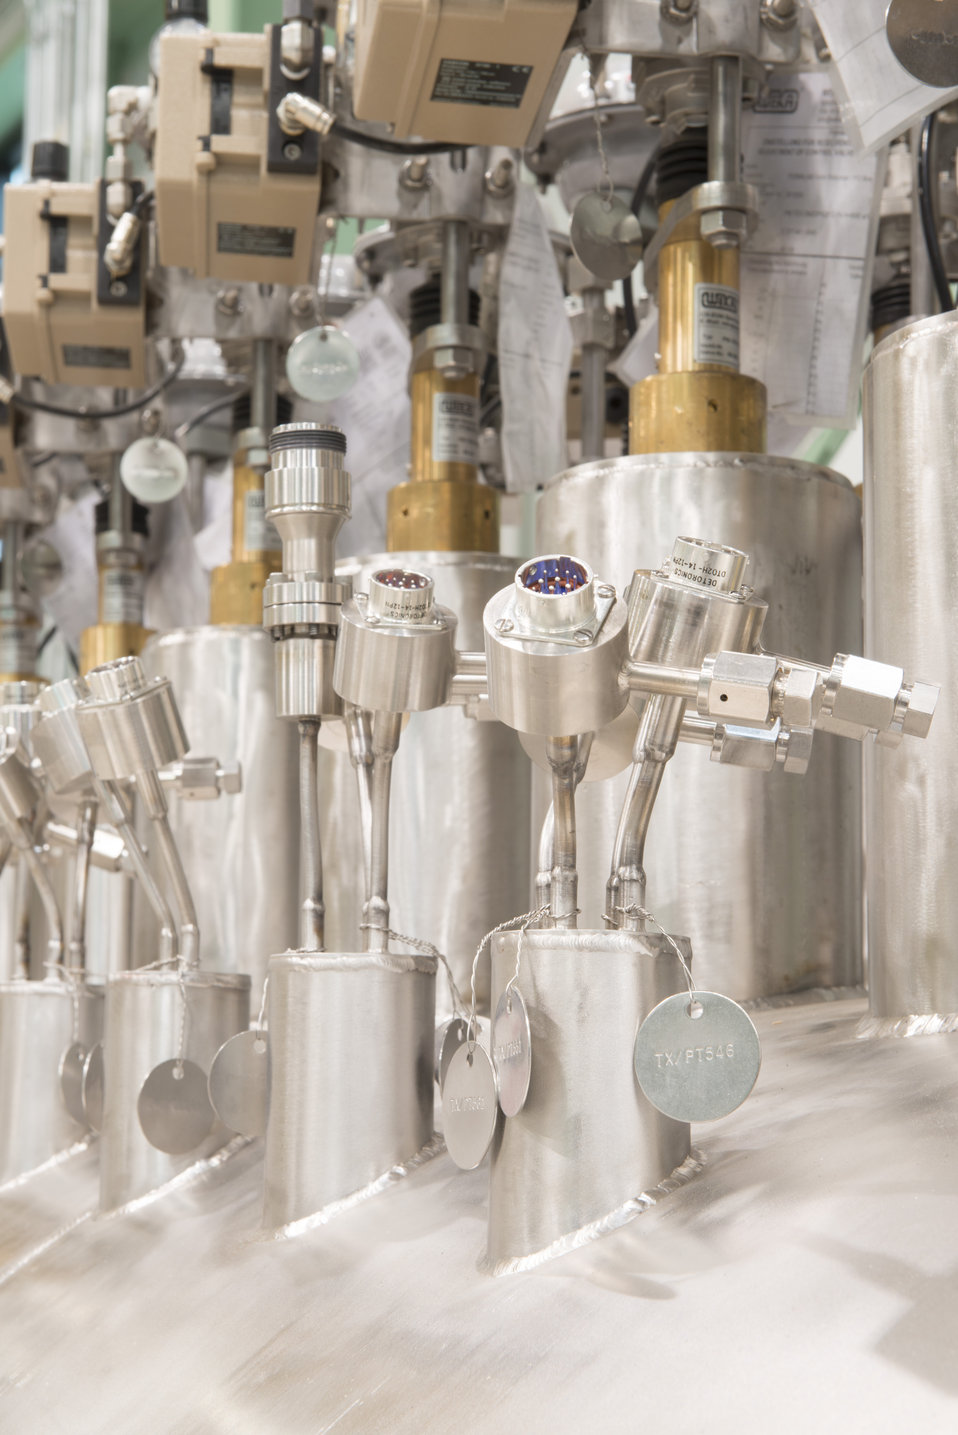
Crymodule Test Facility (CMTF) distribution box for cryogenic systems at Fermi National Accelerator Laboratory.

The CMTF houses radiofrequency systems and a cryogenic plant, crucial components for testing superconducting radio-frequency cavities for the SRF Accelerator Test Facility at the new Muon LAB.